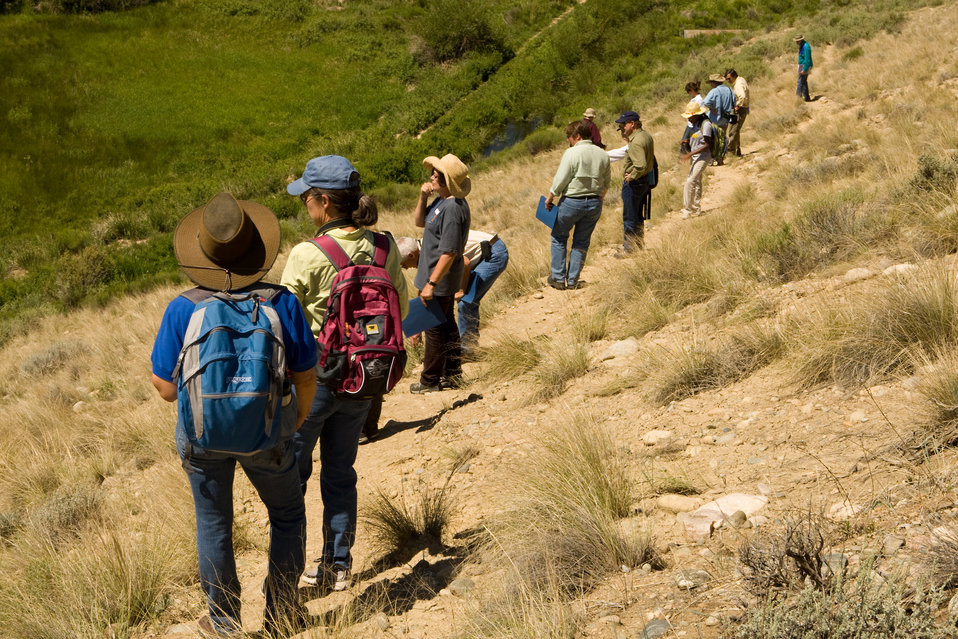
Colorado Rare Plant Conservation Initiative

The Colorado Rare Plant Conservation Initiative (RPCI) is a partnership of 23 statewide and regional agencies, private organizations, and academic institutions working to conserve 121 rare plants in Colorado. As part of these efforts the group developed the Colorado Rare Plant Conservation Strategy, developed Best Management Practices to reduce energy development impacts, addressed climate change, and developed focused strategies for the conservation of individual species at eight priority landscapes. The group has also worked to coordinate volunteer efforts for plant conservation across the state.